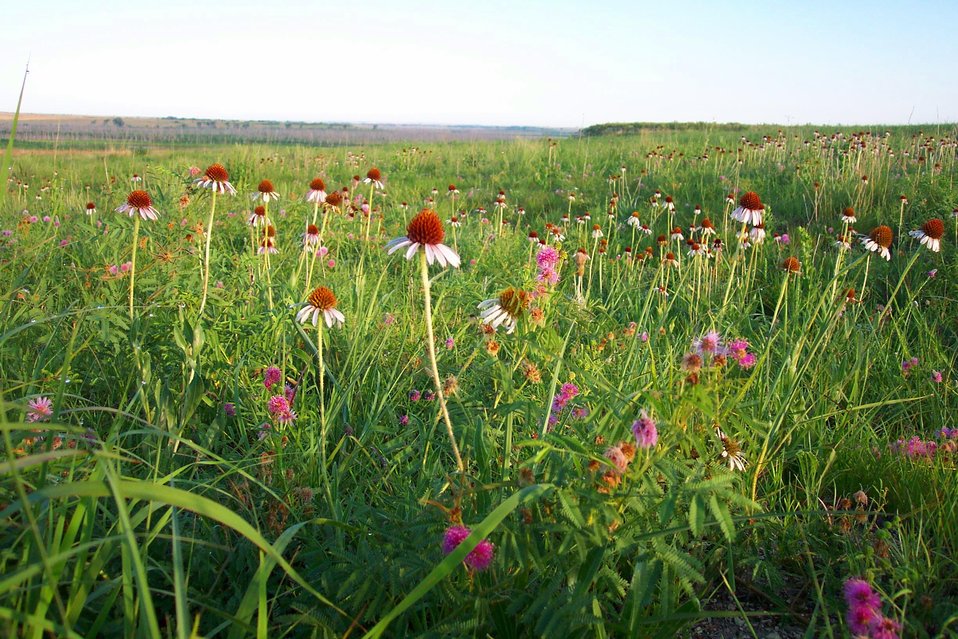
Kirwin Prairie Flowers

This patch of mixed grass prairie at Kirwin NWR in Northcentral Kansas was prescribe burned a couple months before this photo was taken. The result was a great show of Blacksamson Echinacea (Echinacea angustifolia) and Catclaw Sensitivebriar (Schrankia nuttallii).

Credit: Tony Ifland / USFWS

Photo Contest Entry #76